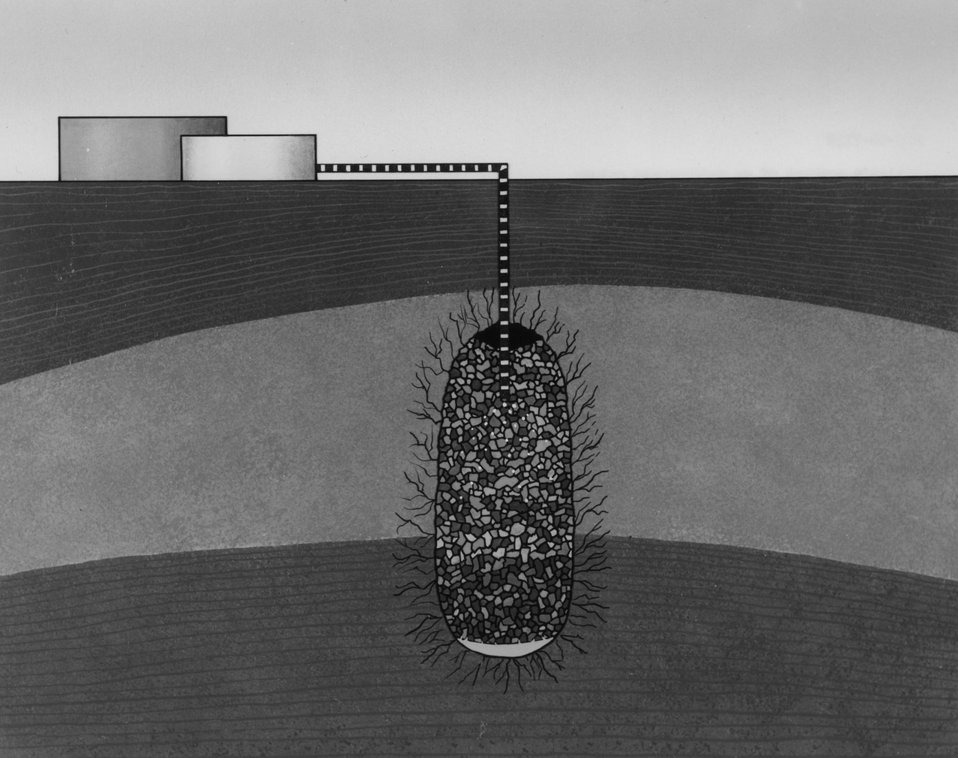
Artist's concept of an underground column (chimney) of broken rock, produced by a nuclear explosion, being used to store gas or liquids. c. 1966